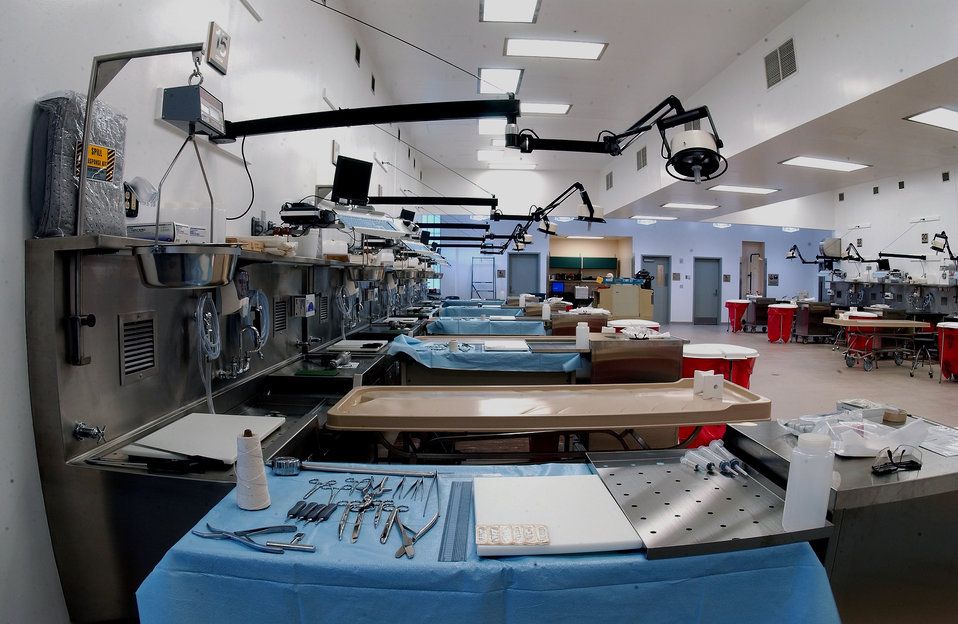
New mortuary opens

DOVER AIR FORCE BASE, Del. -- The Charles C. Carson Center for Mortuary Affairs here is equipped with 23 state-of-the-art autopsy stations. Each of the stations has all the tools necessary for accurate and precise documentation. The new mortuary opened Oct. 28, replacing a 48-year-old facility. It is the Defense Department's only stateside mortuary.